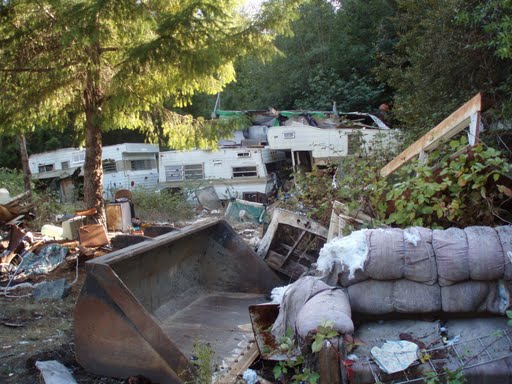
Abandoned vehicles, scattered debris at Tully Creek

More than 700 pounds of hazardous waste and 170 tons of trash have been removed from the illegal dump at Tully Creek, which feeds into the Klamath River. The California Integrated Waste Management Board and the Yurok Tribe did the cleanup.